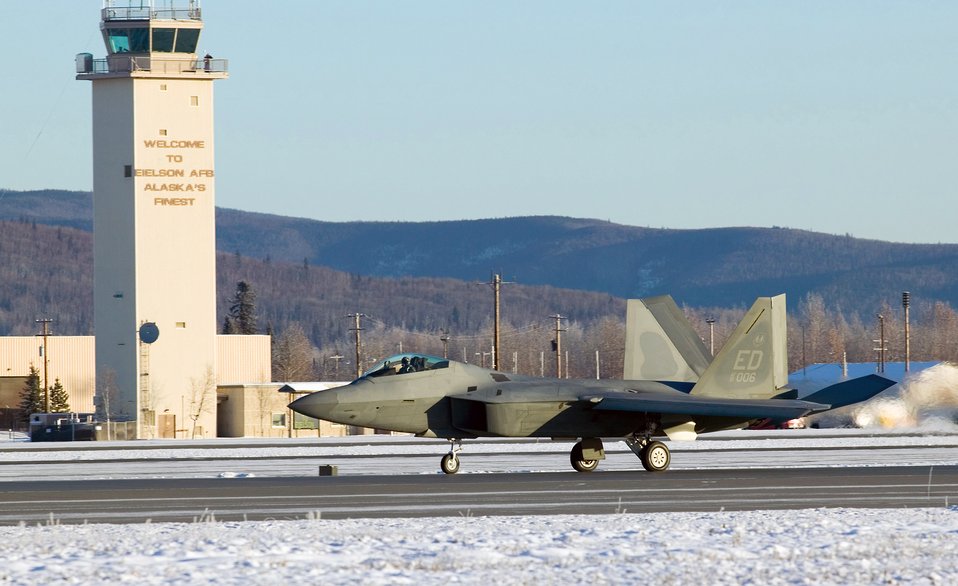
F-22 endures 3-week, cold-weather test at Eielson

An F-22 Raptor comes to a stop Nov. 5 on the runway at Eielson Air Force Base, Alaska. The F-22 underwent cold-weather testing on its braking system, with emphasis on its ability to maneuver, stop and go on slippery surfaces. The aircraft was tested by the 411th Flight Test Squadron during a three-week deployment on incrementally low-level runway condition reading surfaces, with temperatures ranging between 37 to -13 degrees. The F-22 is from Edwards AFB, Calif.